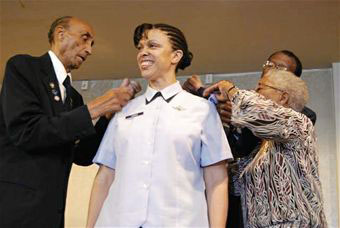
Brig. Gen. Stayce Harris, the Air Force's highest ranking African-American female aviator